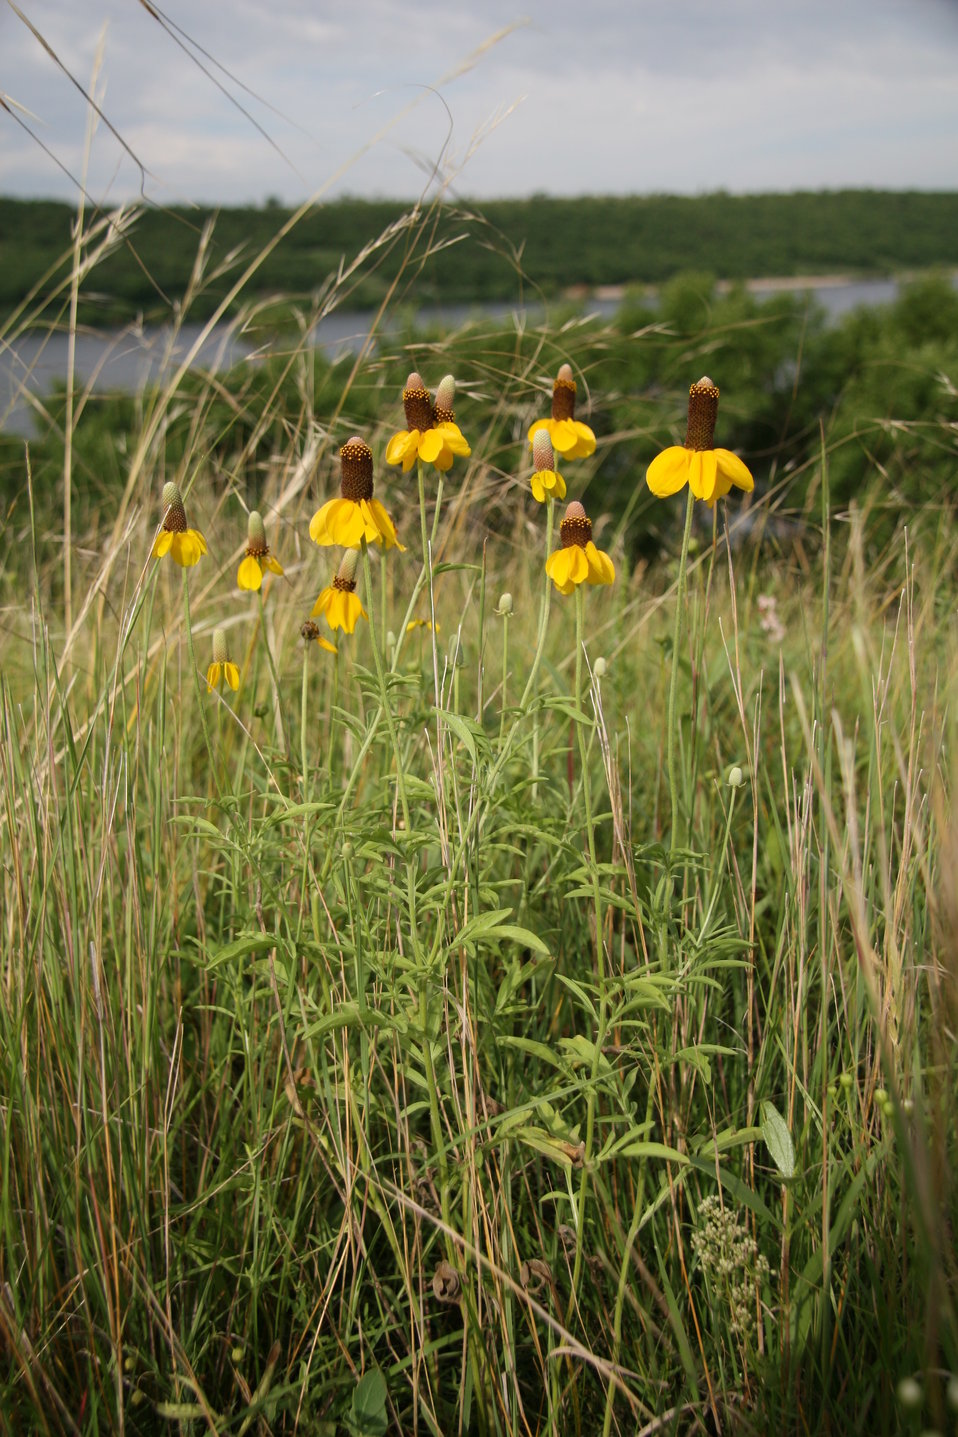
Yellow Coneflowers

Group of yellow coneflowers seen on Wildflower Walk Program in Des Lacs National Wildlife Refuge in North Dakota.